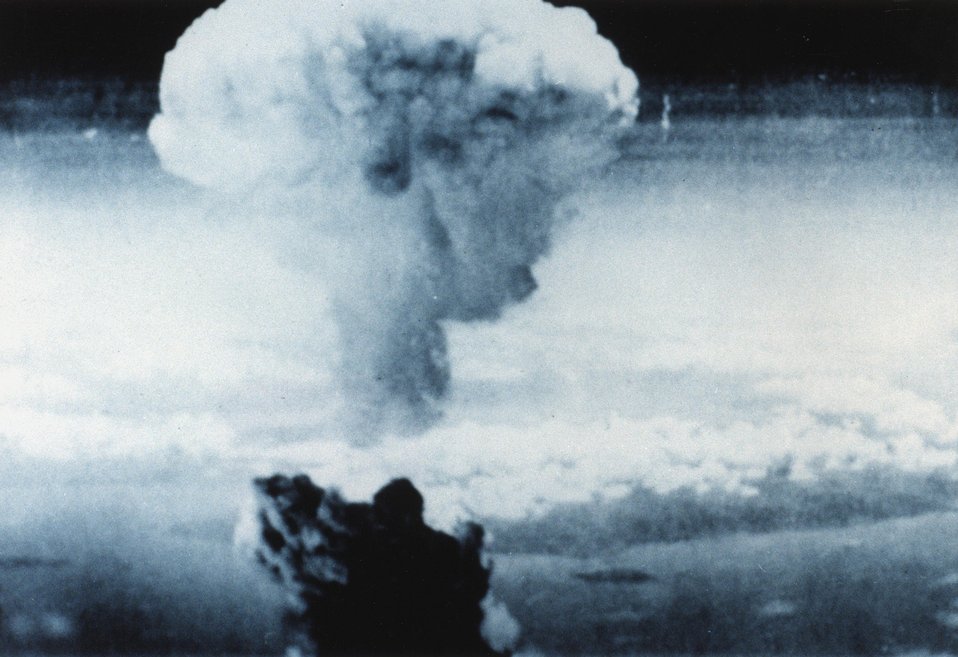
Nagasaki.